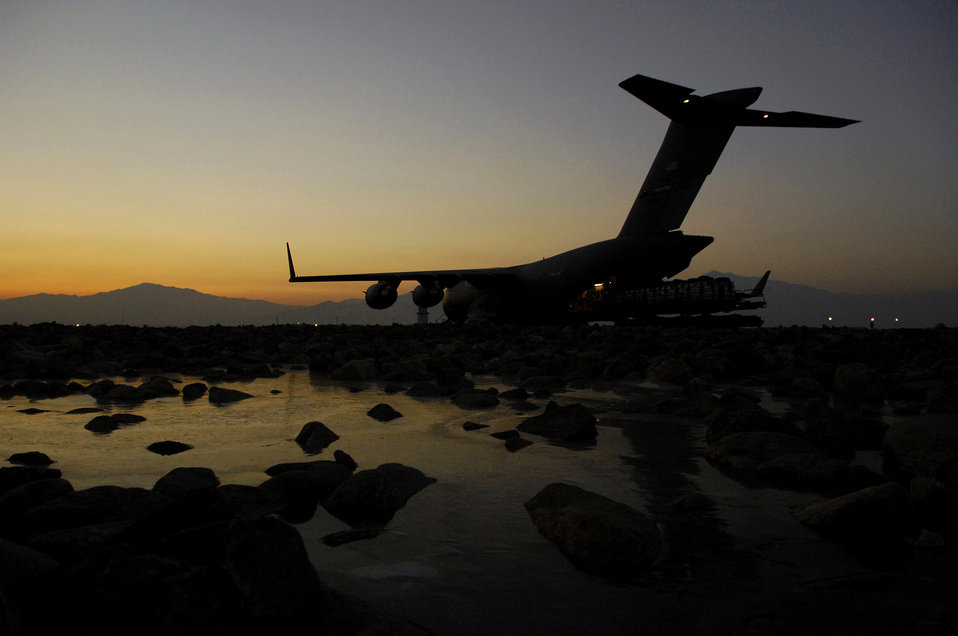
Airmen airdrop 80,000 pounds of food, supplies for Afghans

A C-17 Globemaster III is loaded with bundles for a Joint Precision Airdrop Delivery System of 40 bundles of humanitarian supplies Jan. 14 at Bagram Air Base, Afghanistan.